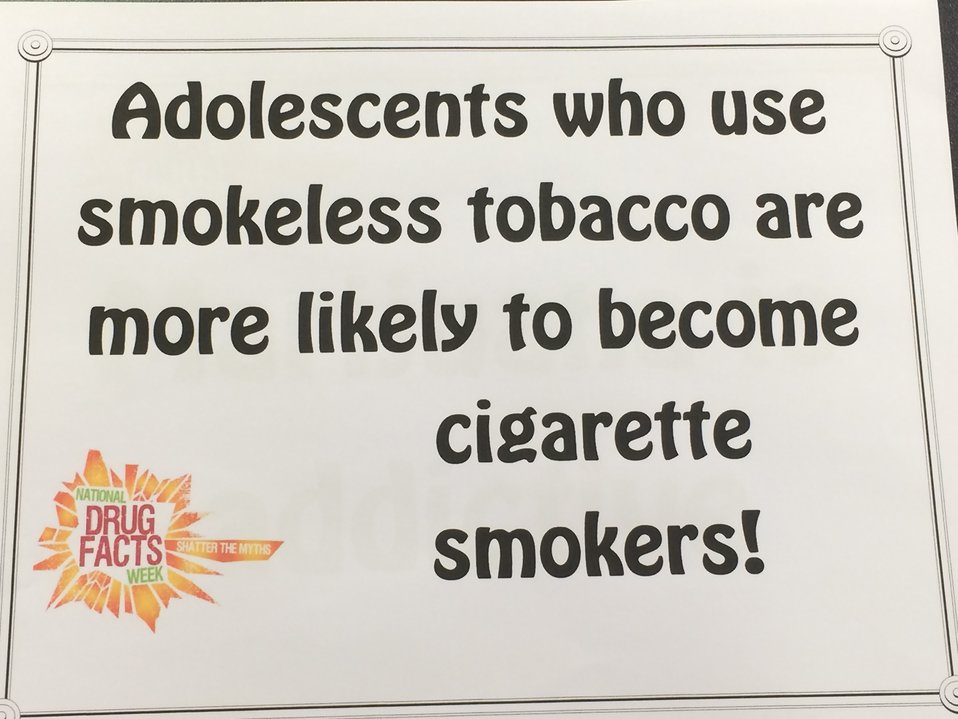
Facts about Smoking

Teenagers from the Van Buren County SAFE Coalition's, Youth Leadership Council (YLC) in Keosauqua, Iowa participate in various events during National Drug Facts Week, 2014.